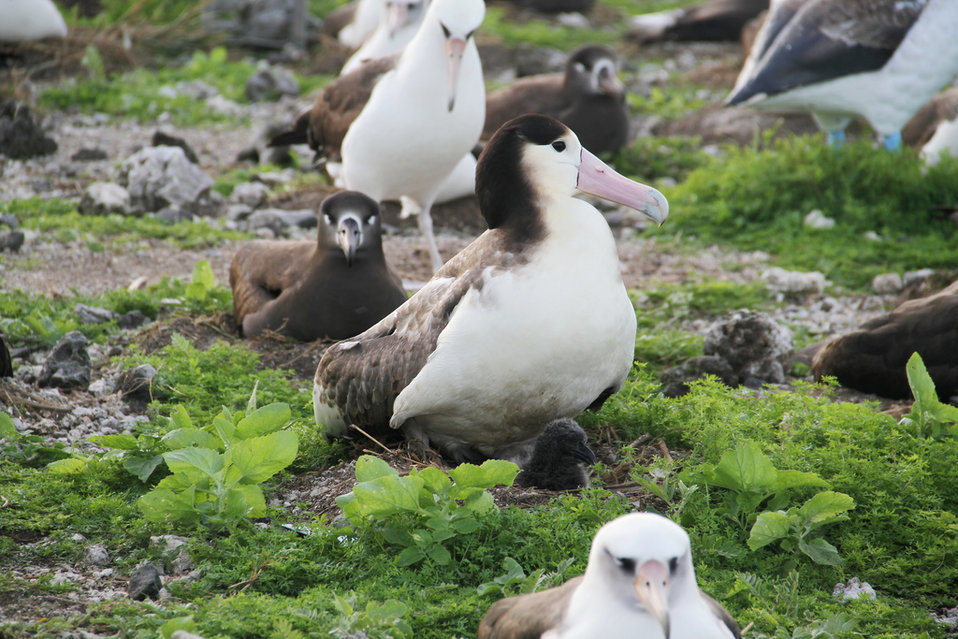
short-tailed albatross chick

The world's only known population of short-tailed albatross nests on a single island in Japan, making the species just one disaster away from extinction. Biologists have worked to help establish a second population at Midway Atoll National Wildlife Refuge in the Pacific Idlands. In 2011 a pair of short-tailed albatross succesfully fledged the first known outside of Japan. On Jan. 12, 2012 the same parents hatched a second chick, raising hopes that Midway Atoll may support a second population. Here the mother - a young bird who still has some immature coloration - broods the newly-hatched chick.